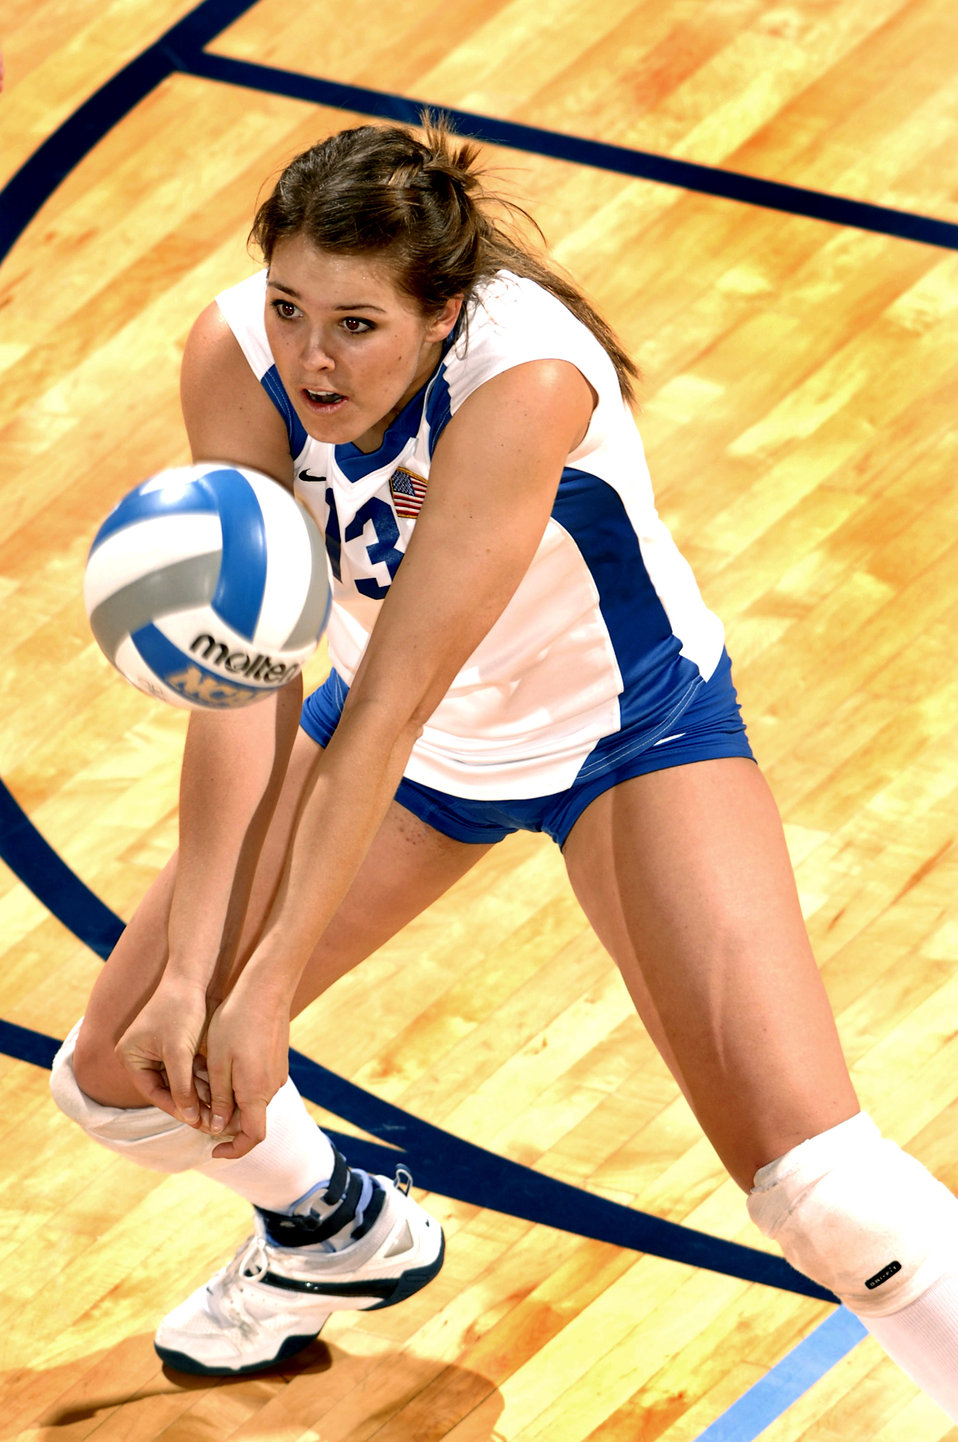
Volleyball: Falcons suffer tough losses

U.S. Air Force Academy freshman Caroline Kurtz assists for a kill against Brigham Young University as the Air Force volleyball team dropped a three-game decision to the 23rd-ranked Cougars Sept. 29 at the Academy's Clune Arena in Colorado. The Falcons return to the road to take on the San Diego State Aztecs Oct. 4 before heading to face the University of Nevada, Las Vegas Oct. 6.